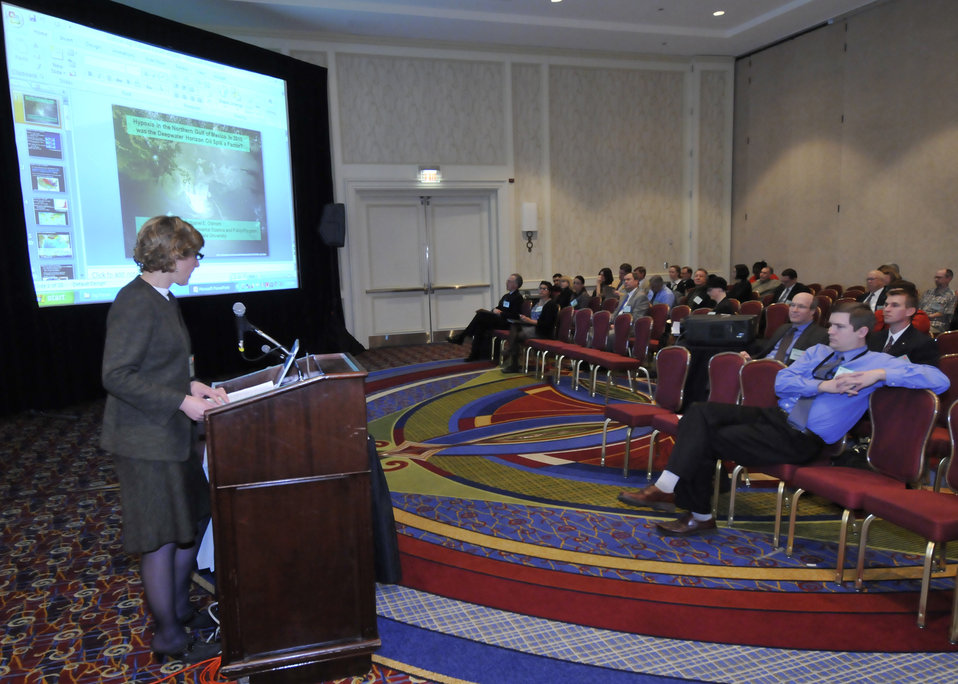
Terrell Erickson, Director, Ecological Sciences Division, Natural Resources Conservation Service moderates the break-out session on “Gulf Coast Conservation Challenges: Oil, Hypoxia and Habitat” at the World Agricultural Outlook Board Forum in Crystal City, VA,Thursday, February 24, 2011. The session included presentations on different aspects of challenges in the conservation of the Gulf of Mexico.